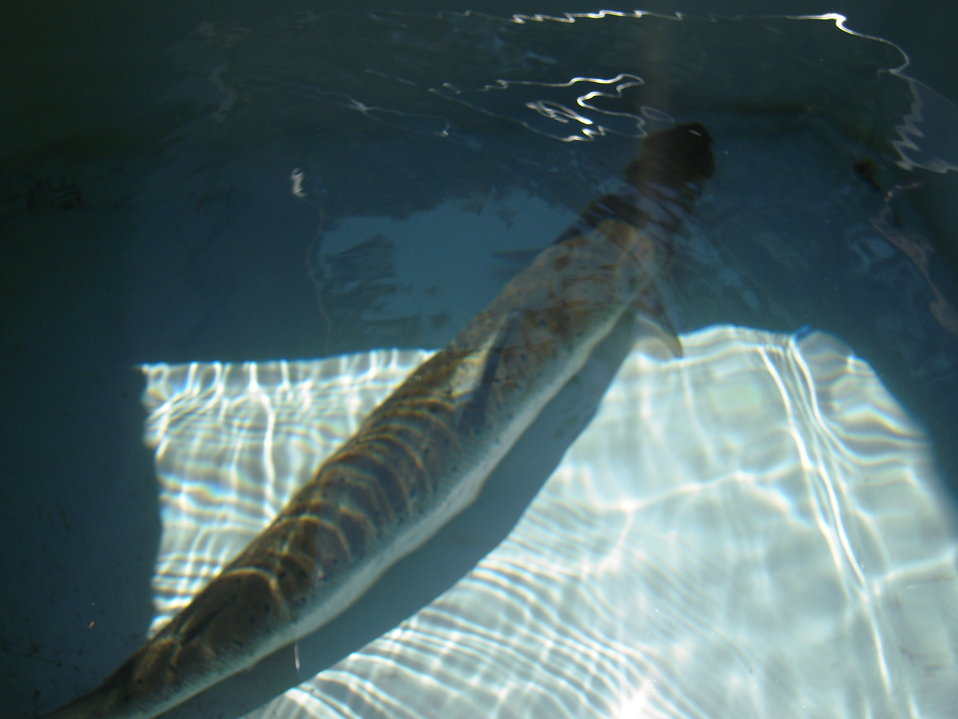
Atlantic salmon ready for hatchery